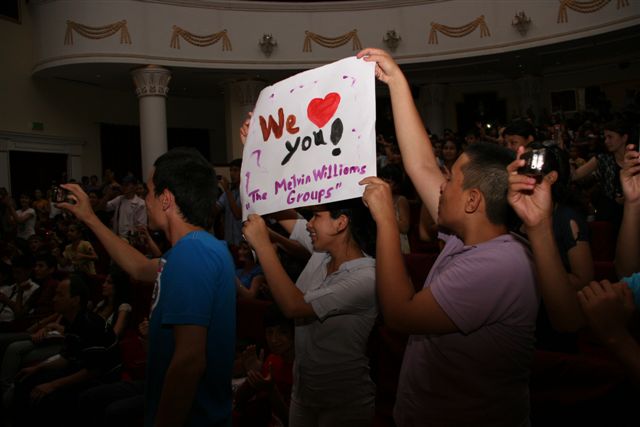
: Fans Hold Up Posters During the Melvin Williams Group's Concert

Fans hold up posters during the Melvin Williams Group's concert in Turkmenabat, Turkmenistan, on June 22, 2011. The Melvin Williams Group is visiting Turkmenistan from June 21-26, 2011, as part of the U.S. Embassy’s annual American Culture Days celebration.